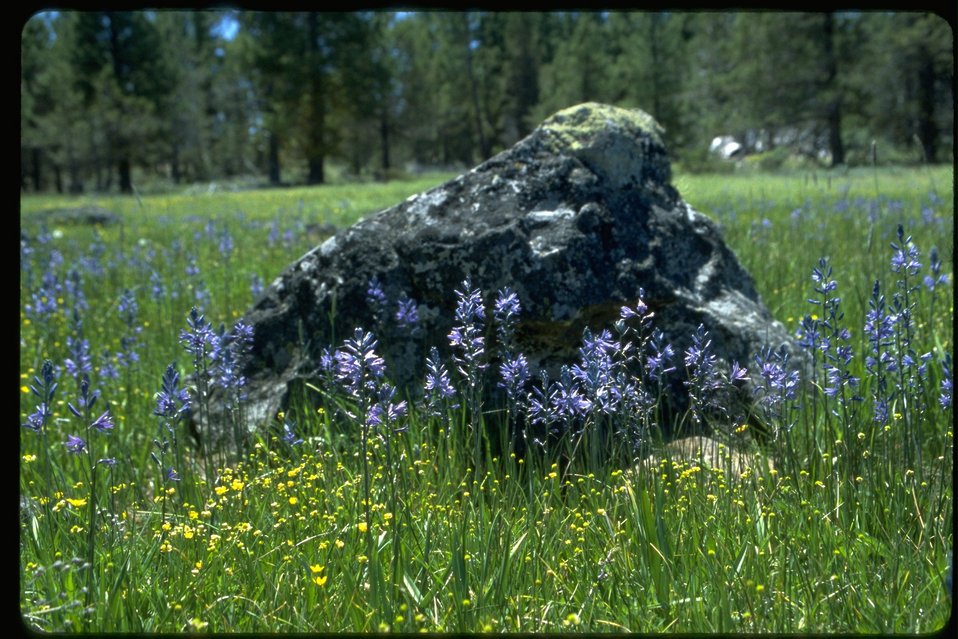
Medium shot of Blue Camas against rock.